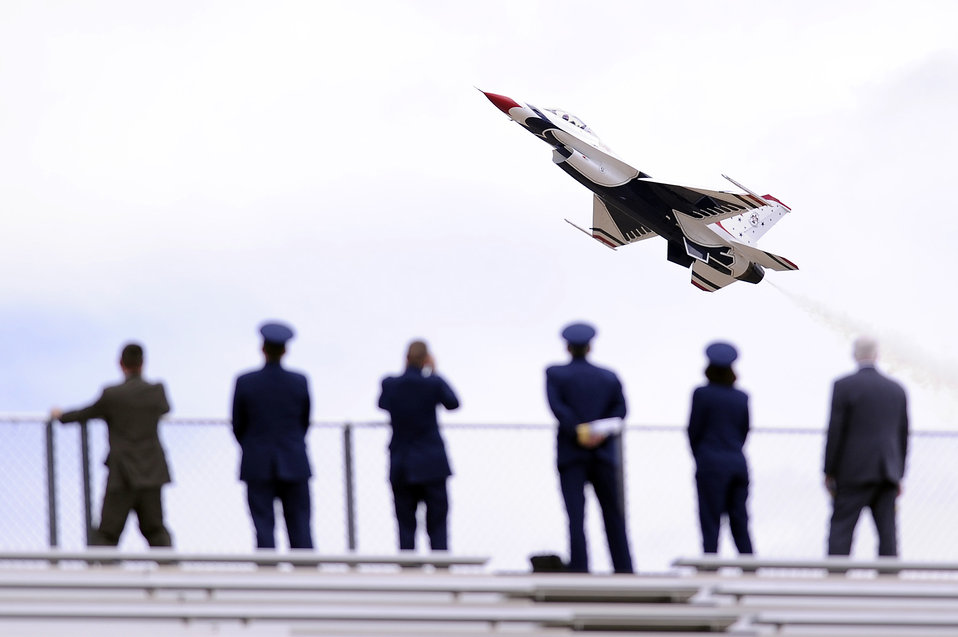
Aim high

The Thunderbirds perform May 25, 2011, after the graduation ceremony at the Air Force Academy in Colorado Springs, Colo.